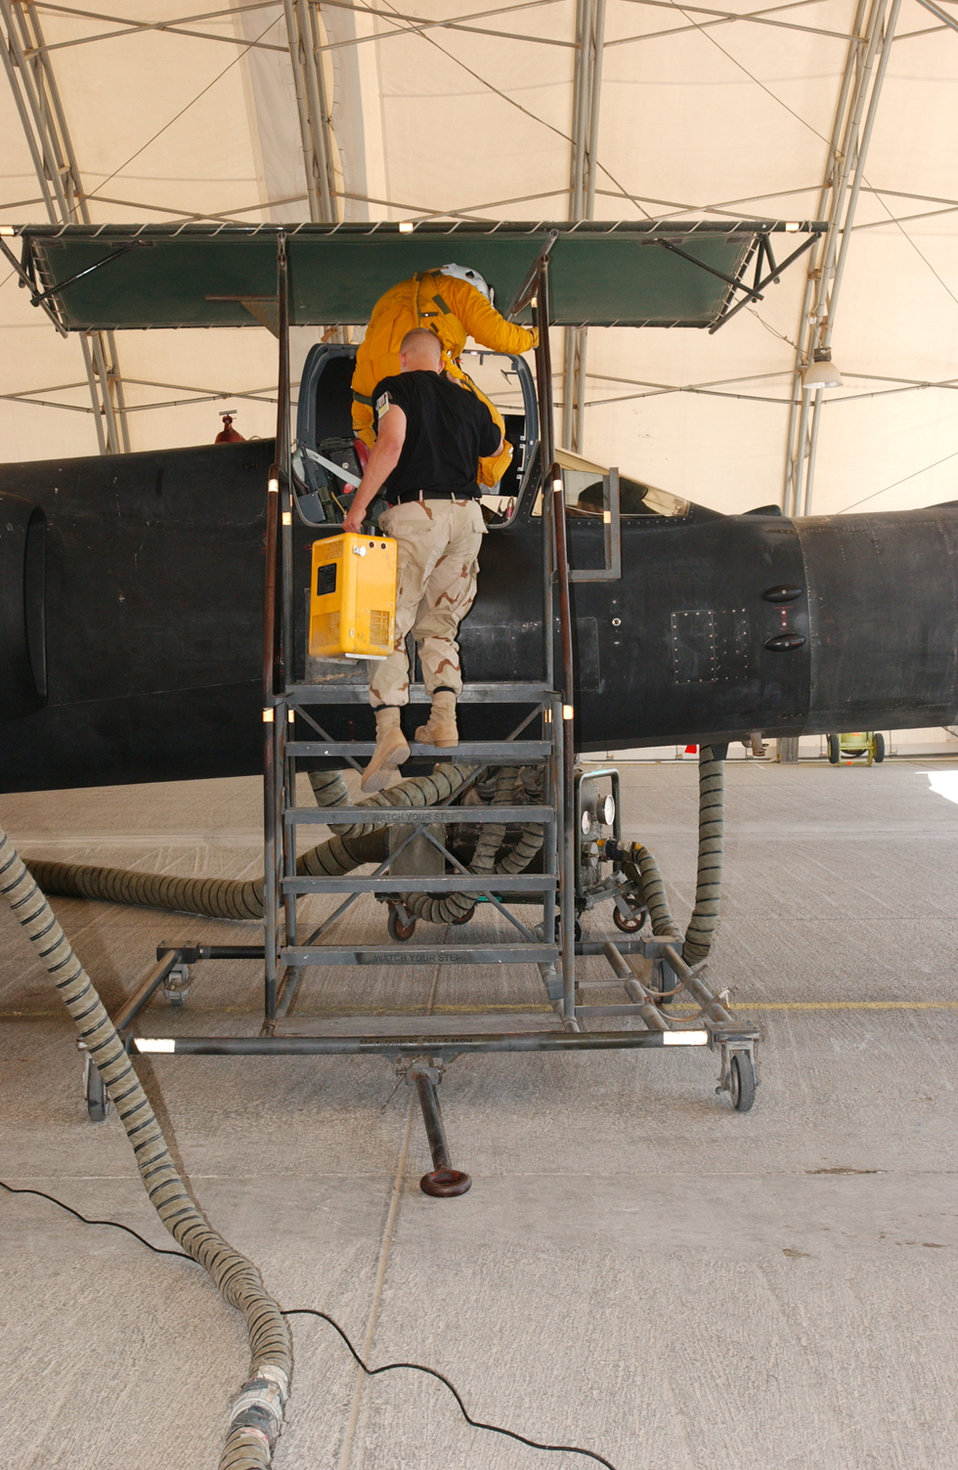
Life support team puts pressure on high-flying pilots

SOUTHWEST ASIA -- Senior Airman Duane Thompson helps Maj. Cory Bartholomew into a U-2 reconnaissance aircraft. The space suits U-2 pilots wear are bulky and limit movement, so life-support crew specialists strap the pilots into the cockpit and connect hoses and communication systems. The pilots wear space suits because they typically fly higher than 60,000 feet -- twice as high as a commercial airliner. Airman Thompson is a life-support crew specialist with the 99th Expeditionary Reconnaissance Squadron's physiological support division. Major Bartholomew is a U-2 pilot with the 99th ERS.